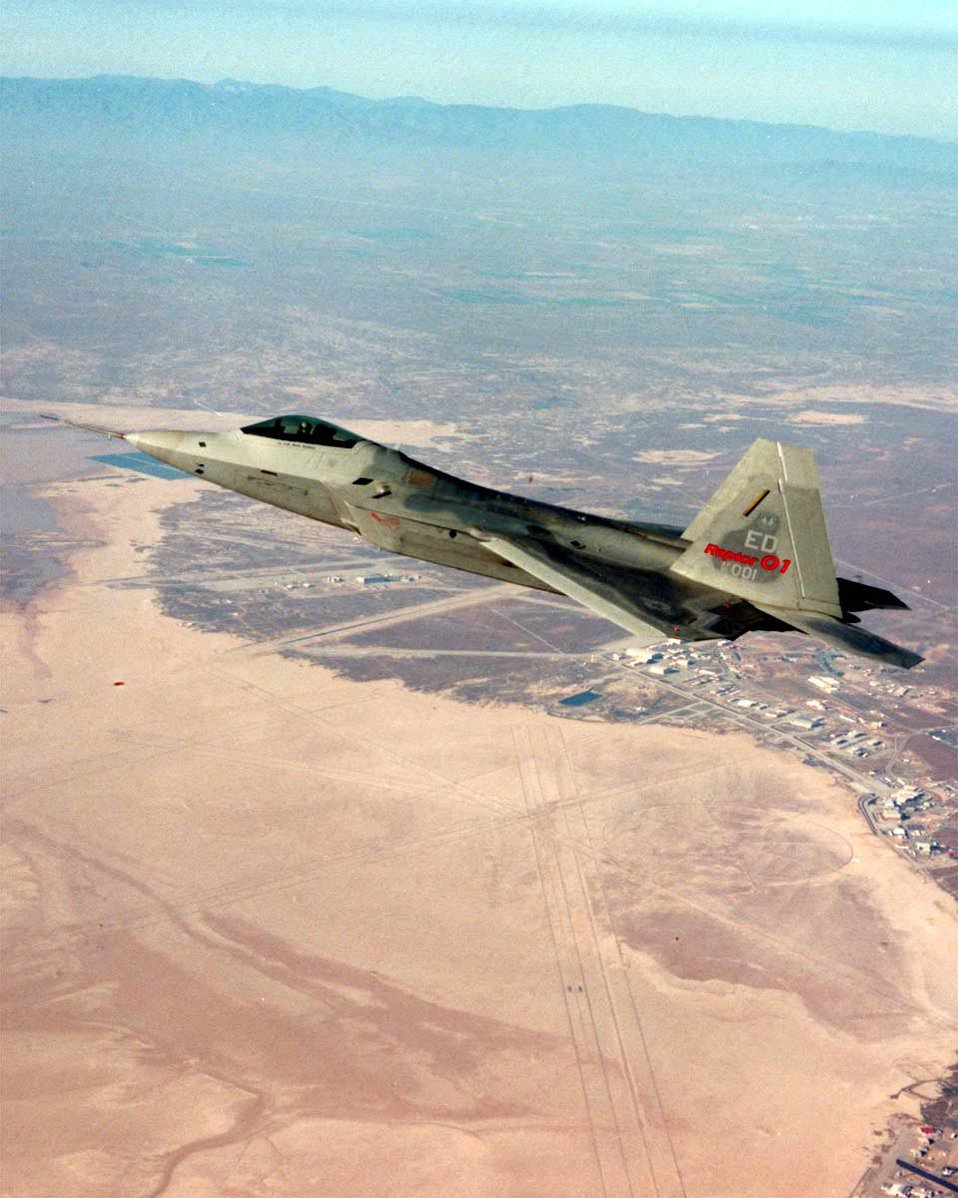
F/A-22 Raptor

FILE PHOTO -- The F/A-22 Raptor on its first test flight at Edwards Air Force Base, Calif.